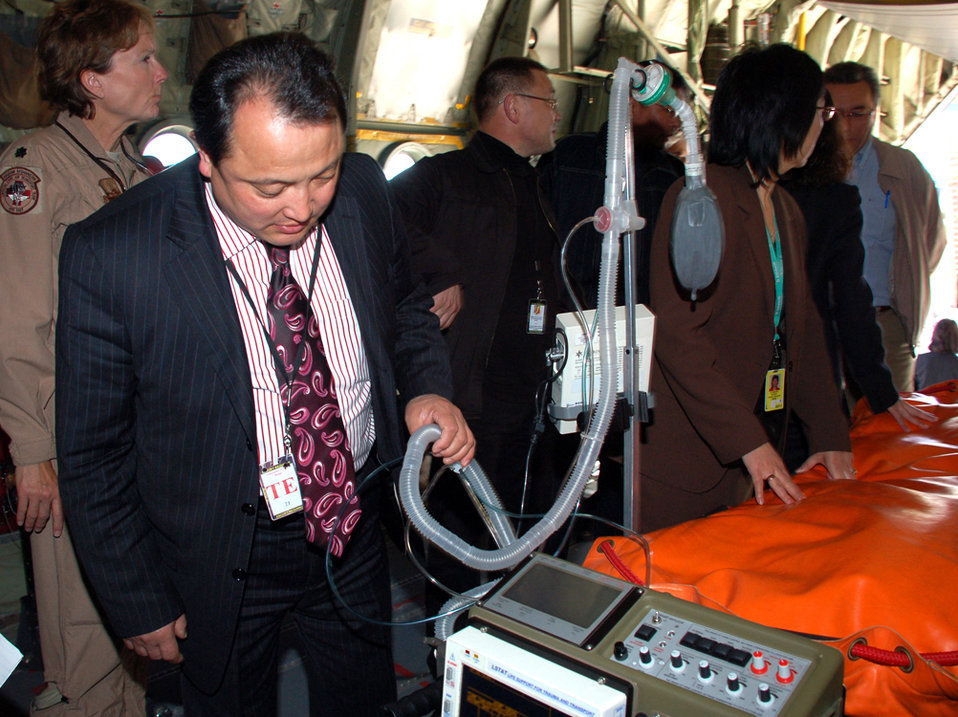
Med group holds symposium

Dr. Sabyrbek Djumabekov examines medical equipment housed on a Spanish C-130 aeromedical evacuation plane during the 376th Expeditionary Medical Group's recent coalition medical symposium at Manas Air Base, Kyrgyzstan. Doctor Djumabekov is director of the Bishkek Scientific Research Center of Trauma and Orthopedics. He and his colleagues, along with Spanish coalition medical staff, U.S. Embassy medical unit personnel and Peace Corps medical staff were guests of the symposium hosted by 376th EMDG.